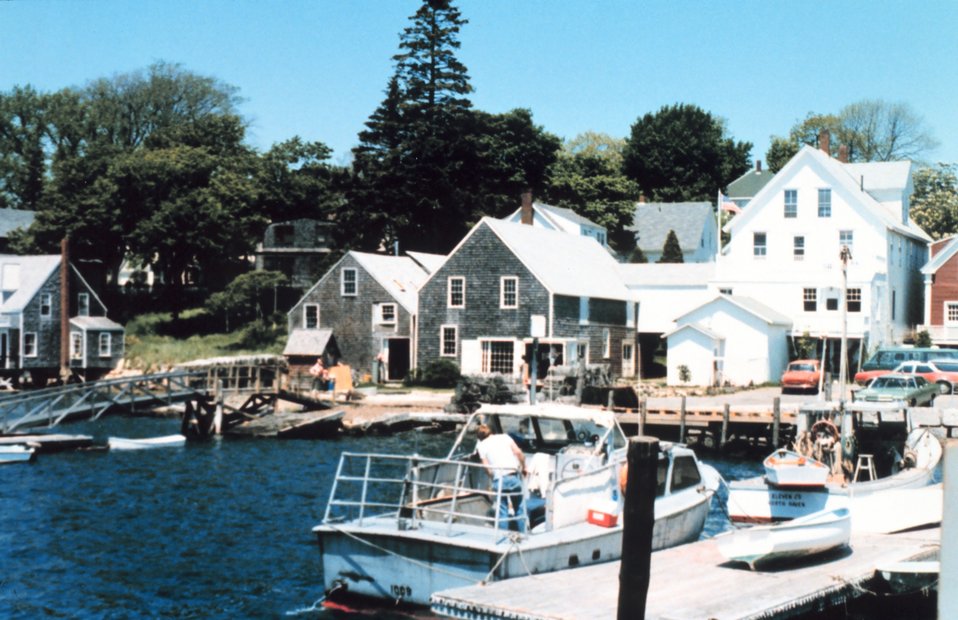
Deer Island, Penobscot Bay area